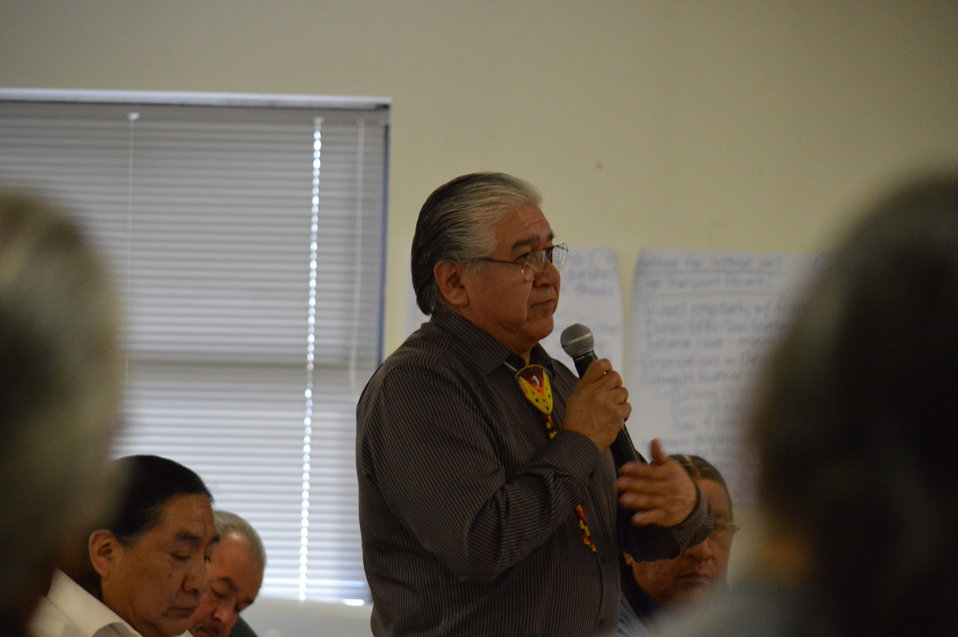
Eagle Summit III - Consultation

Questions and comments during the consultation at the Eagle Summit III in Denver, Colorado on March 20, 2014 at the Rocky Mountain Arsenal National Wildlife Refuge.